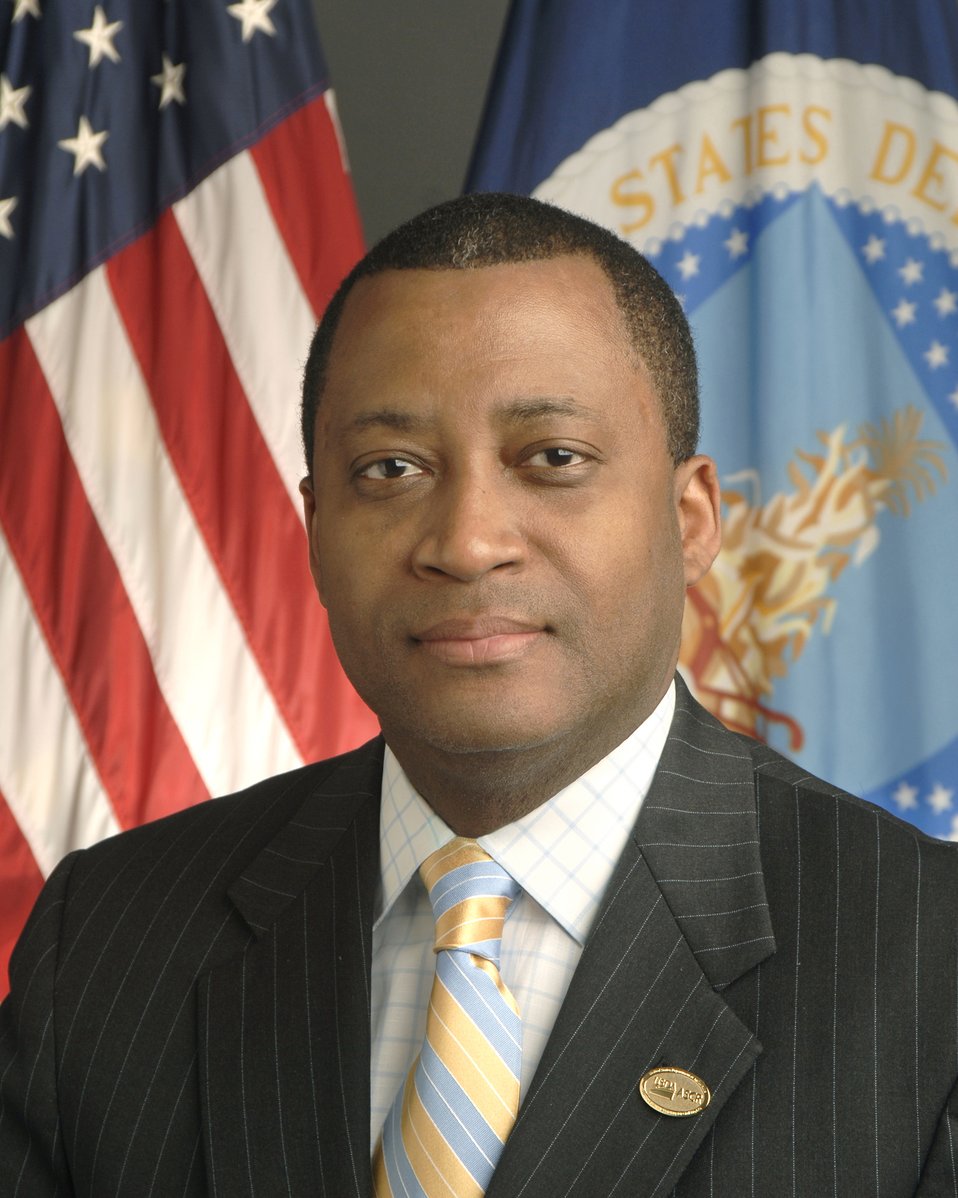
09di1048-003 Assistant Secretary for Civil Rights Dr. Joe Leonard

USDA Assistant Secretary for Civil Rights Dr. Joe Leonard.